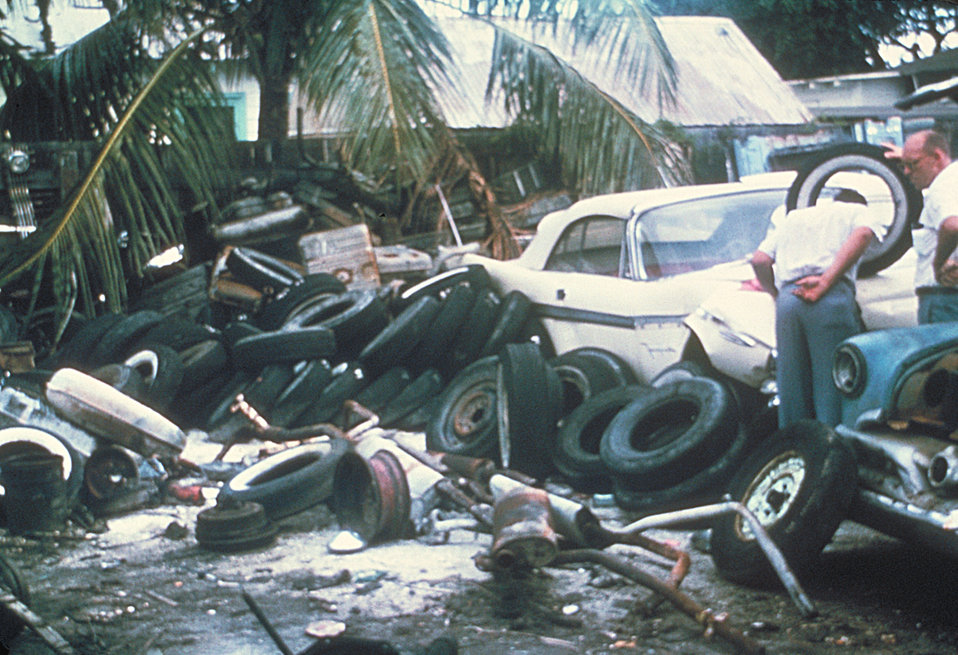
Car junk yard in West Palm Beach, Florida. Potential mosquito breeding site.